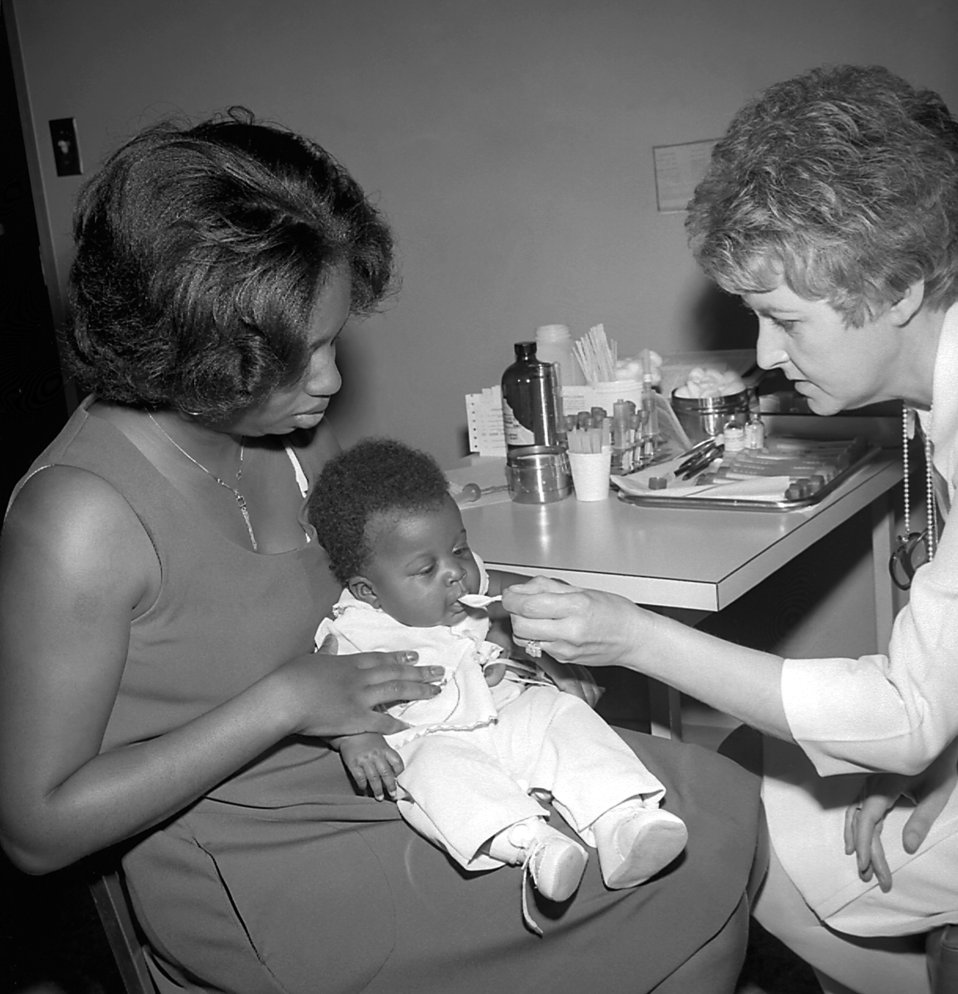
An infant receiving a Polio vaccination

A photograph depicting the oral administration of Polio vaccine in order to immunize this infant to the disease.